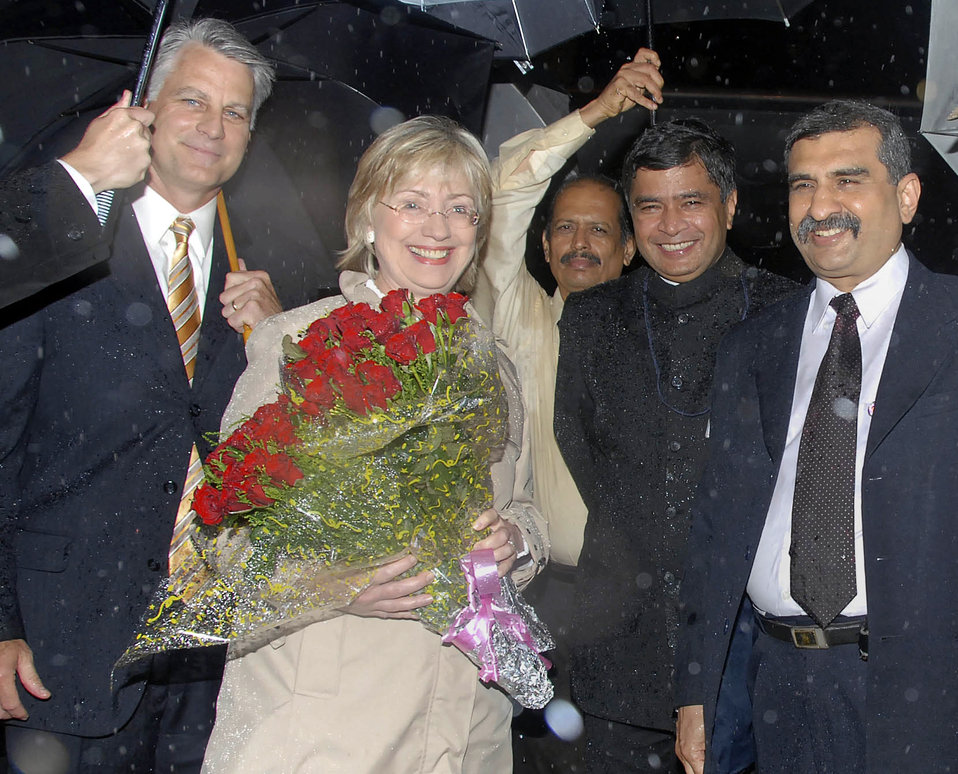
Secretary Clinton Arrives in Mumbai, India

U.S. Secretary of State Hillary Clinton arrives at Chhatrapati Shivaji International Airport in Mumbai, India July 17, 2009. (L-R) U.S. Ambassador-Designate Timothy J. Roemer, U.S. Secretary of State Hillary Rodham Clinton, Chief of Protocol Officer Sumit Mallik, Deputy Chief of Protocol Officer S.V. Bijoor.